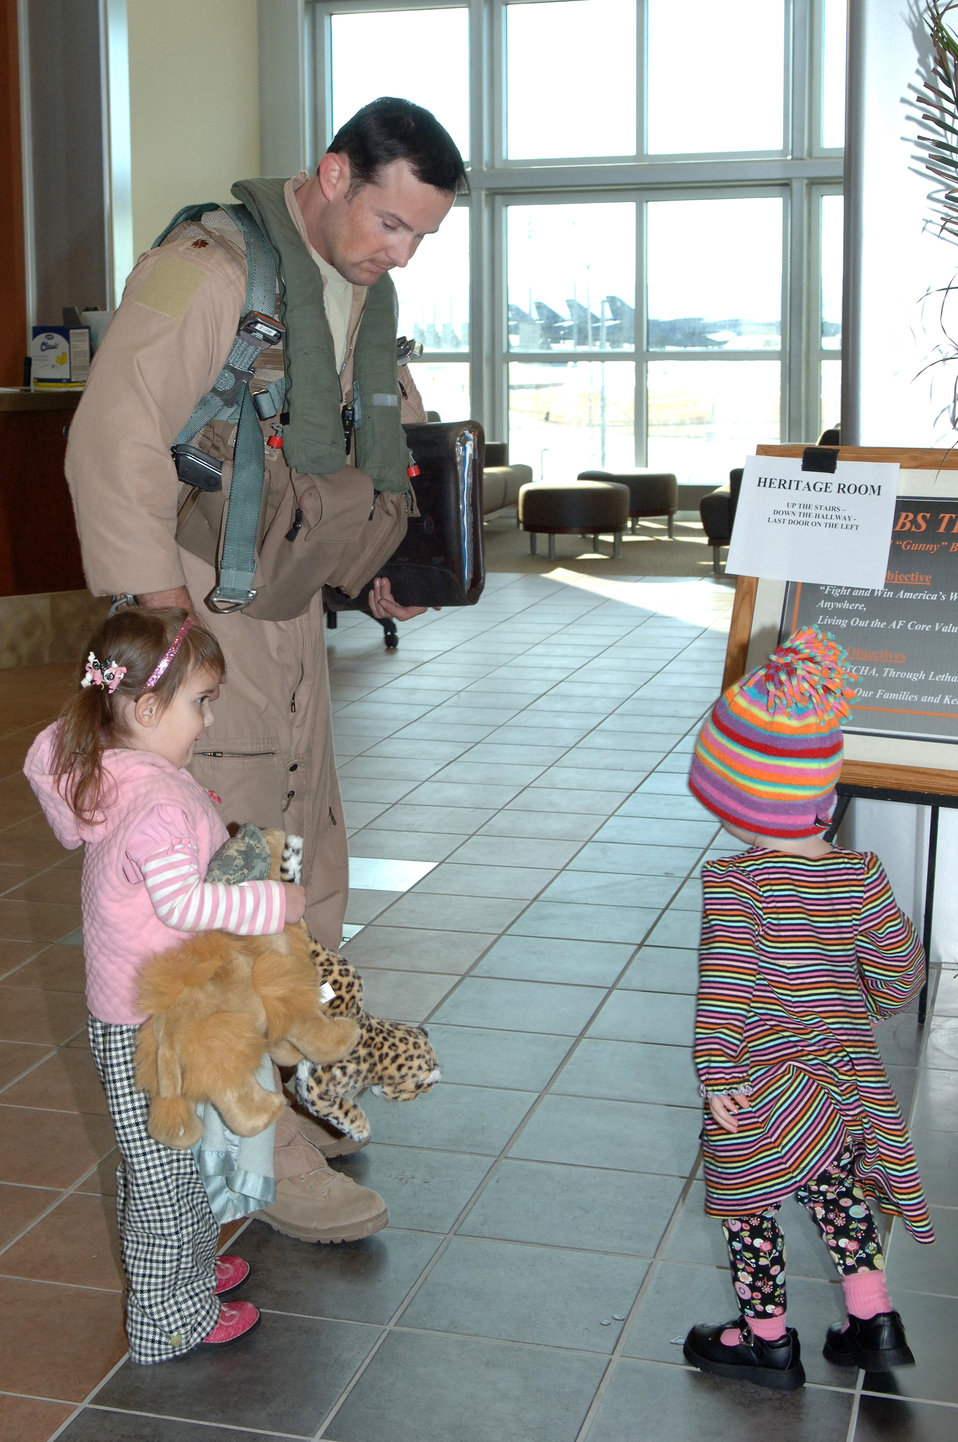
Pilots return to Ellsworth

Maj. Mark Rusk returns home form a five-month deployment to Southwest Asia and is welcomed by his two daughters, Zoe and Riley Rusk, Jan. 21 at Ellsworth Air Force Base, S.D. Major Rusk is a B-1 Lancer pilot with the 28th Bomb Wing who was deployed in support of operations Iraqi Freedom and Enduring Freedom.